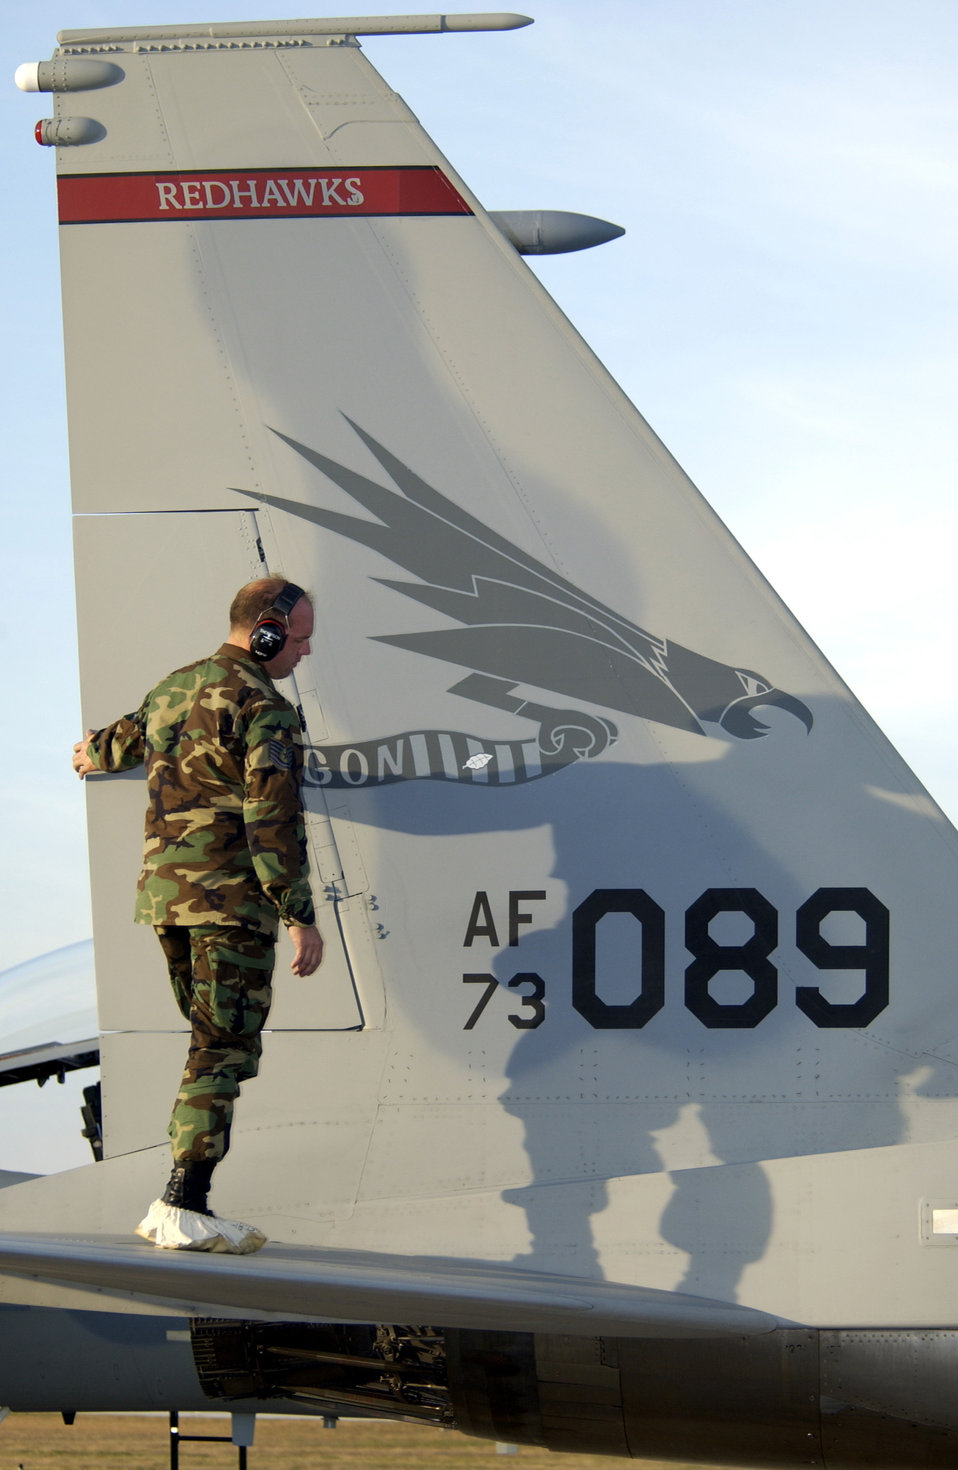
Tail inspection

TYNDALL AIR FORCE BASE, Fla. -- Tech. Sgt. Jay Thompson inspects the tail of an F-15 Eagle for damage during William Tell 2004 here Nov 9. This is the 50th anniversary of the William Tell competition, which tests an aircrew's ability to perform under combat conditions. Two weeks of competition will challenge pilots, weapons loaders and maintainers from five F-15 fighter wings. Sergeant Thompson is assigned to the Oregon National Guard's 142nd Aircraft Maintenance Squadron.